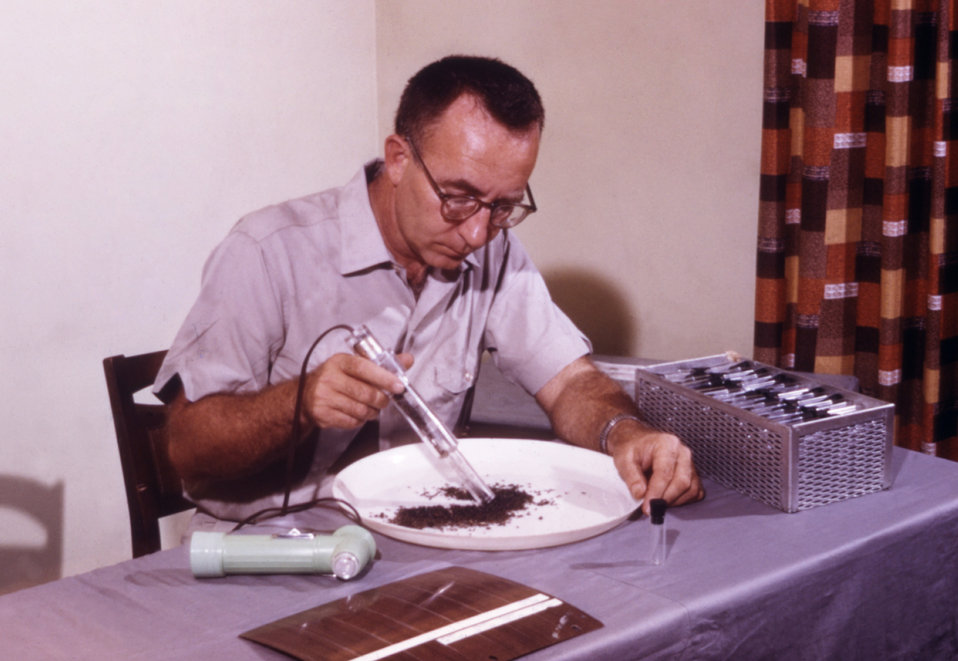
This CDC field researcher is shown collecting the deceased mosquitoes with a mechanical aspirator for an arbovirus study.